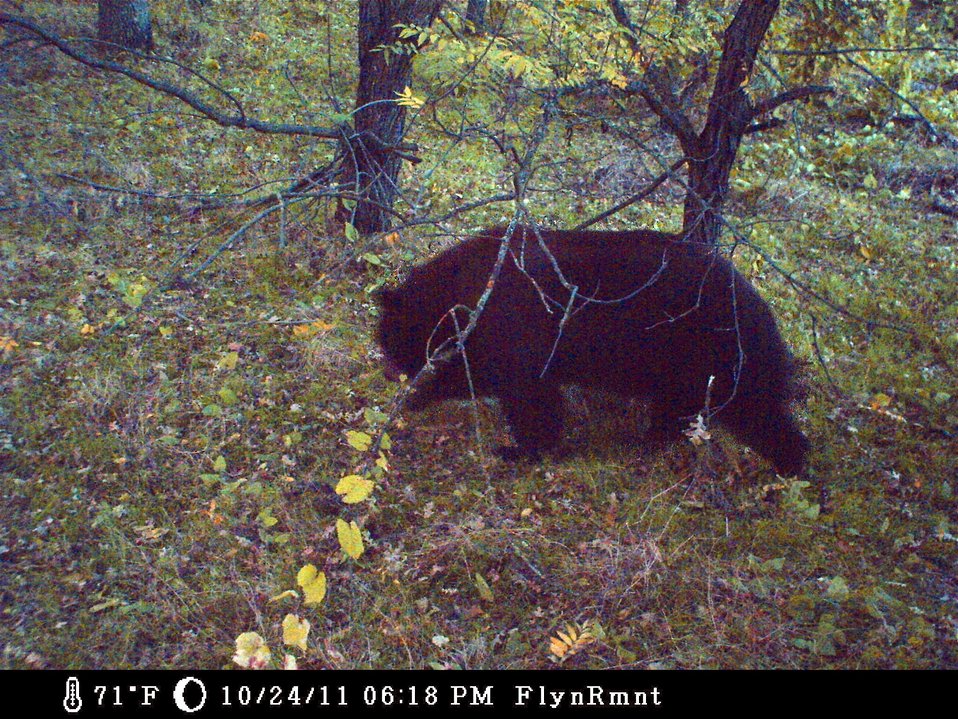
snufflling bear

black bear
trail camera photo
Sacramento River National Wildlife Refuge, CA